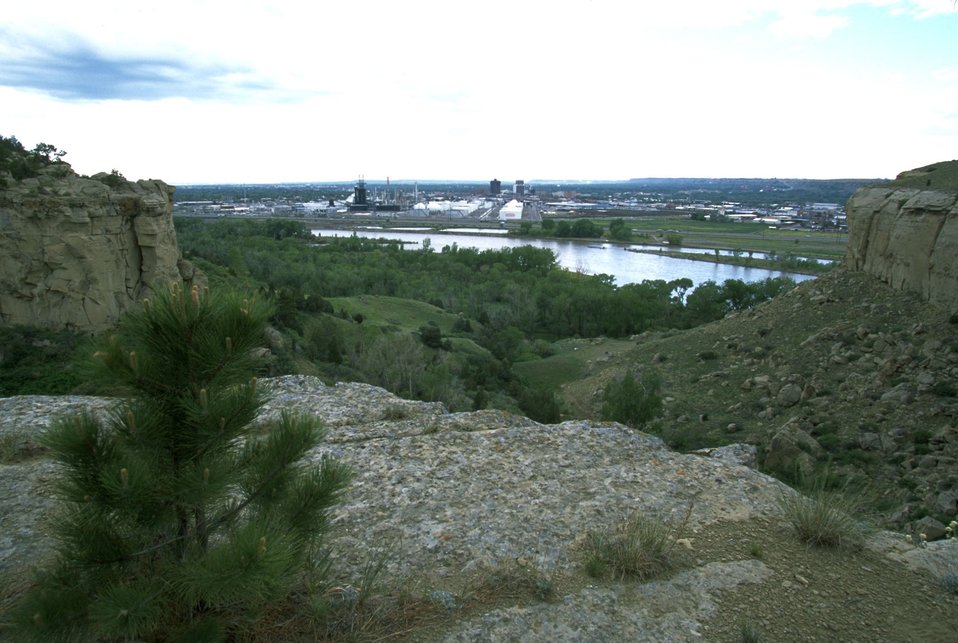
View of Billings MTand the Yellowstone River from the rimrocks in the Four Dances Natural Area